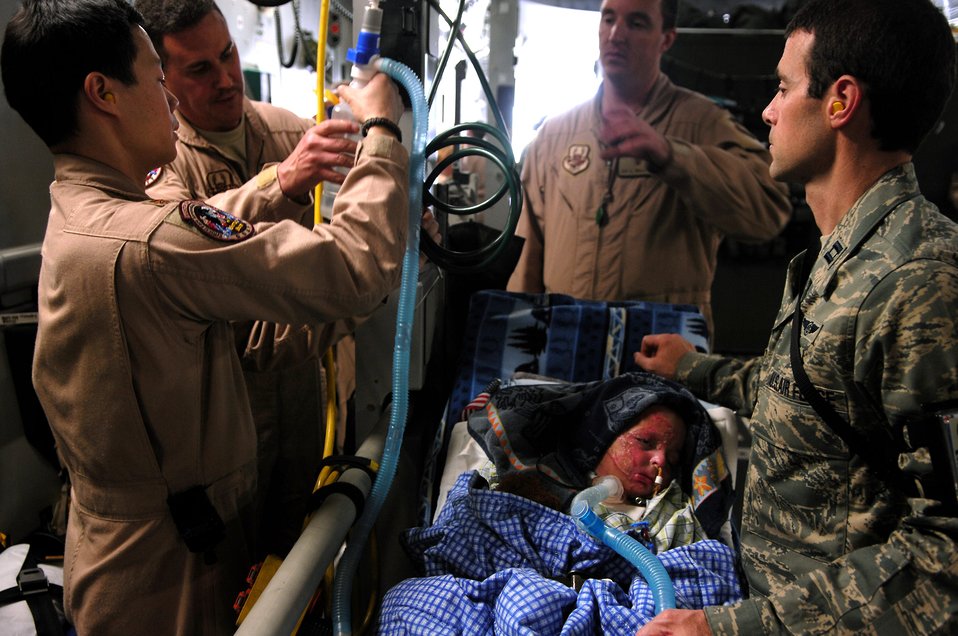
Handle with care

Members of the 332nd Expeditionary Aeromedical Evacuation Flight's Critical Care Transportation Team prepare Al Amreeki, a 3-year-old Iraqi burn victim, for a flight to the United States March 21. The Shriners Hospitals for Children-Cincinnati will provide ongoing treatment and rehabilitation.